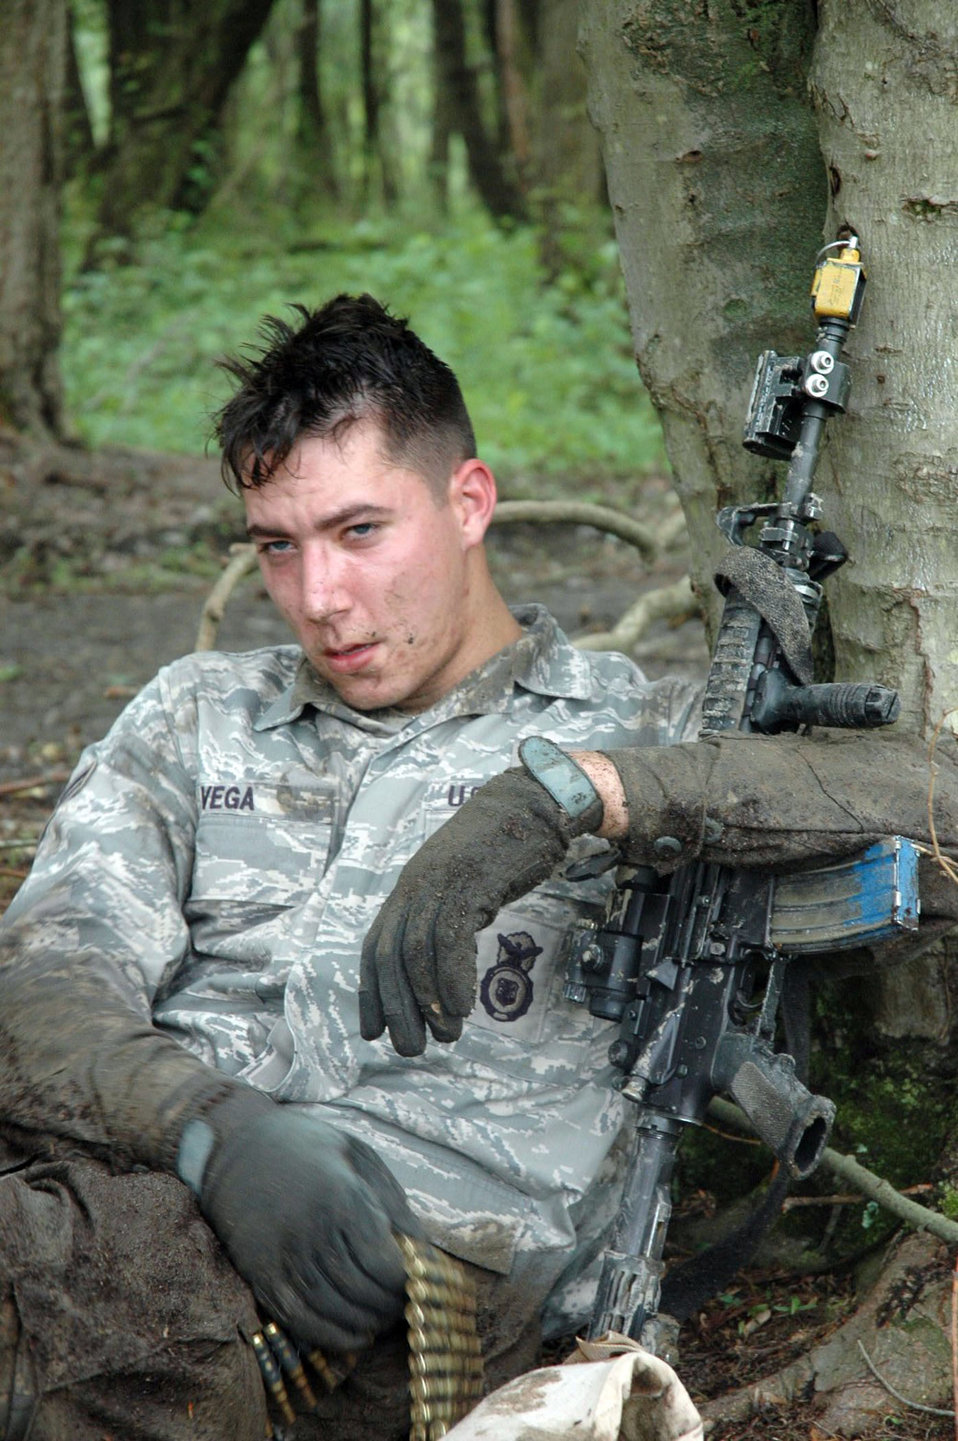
U.S. Air Force Expeditionary Center: Phoenix Warrior Training Course

Airman 1st Class John Vega takes a rest after he and other students in the Air Force Phoenix Warrior Training Course completed a run on an obstacle course for a combat first aid class June 5 at Fort Dix, N.J. Phoenix Warrior trains Airmen for upcoming deployments and is operated by members of Air Force Expeditionary Center's Expeditionary Operations School and 421st Combat Training Squadron. Airman Vega is from the 30th Security Forces Squadron, Vandeburg Air Force Base, Calif.